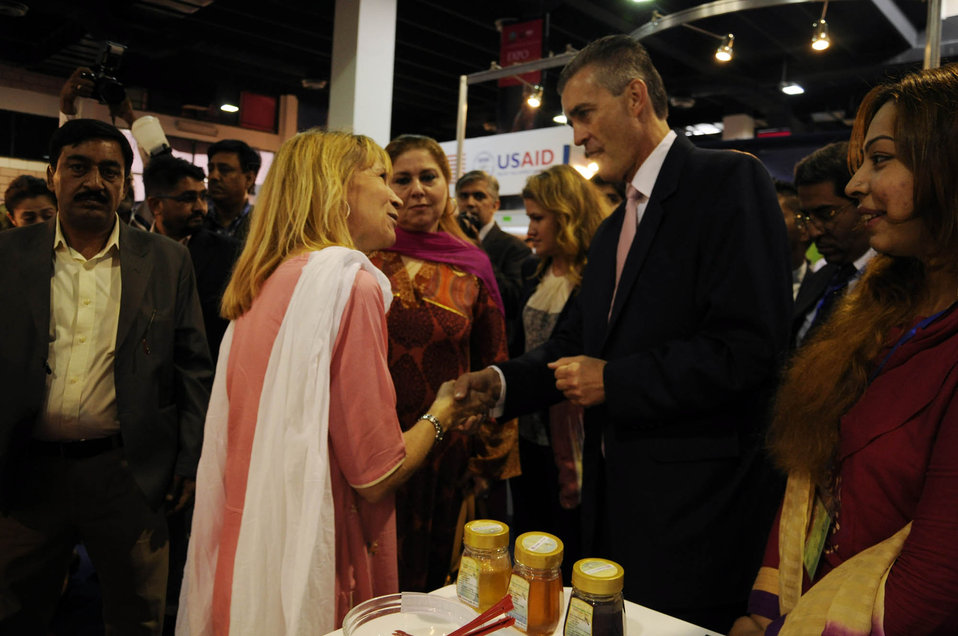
US Ambassador Mr. Richard G. Olson greeted by Ms. Susan Slamback, COP USAID's Entrepreneurs Project